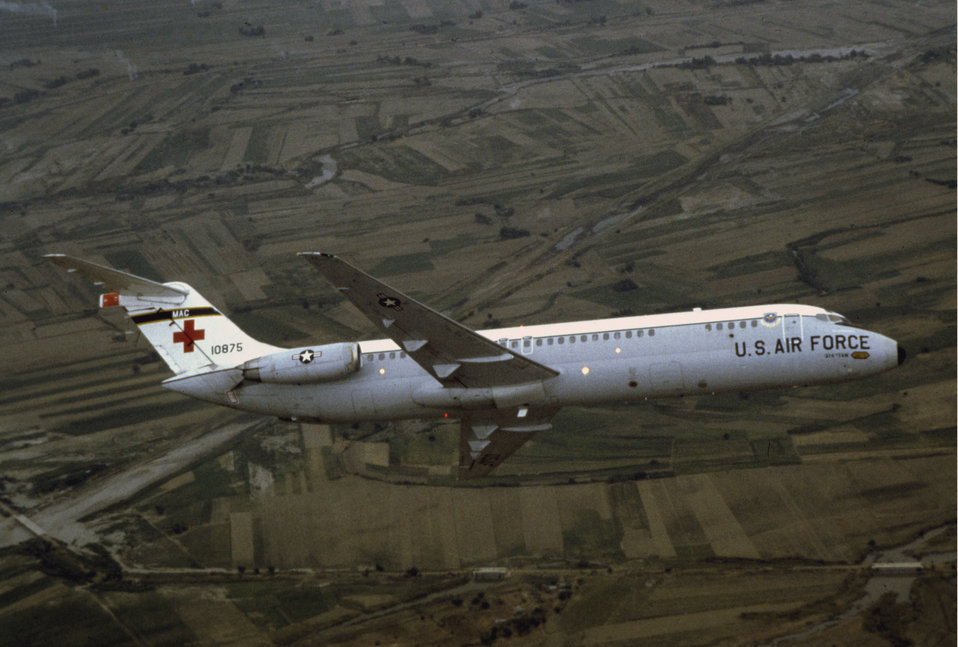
C-9 Nightingale

1960s -- The C-9 Nightingale became part of the Air Force inventory August 1968.